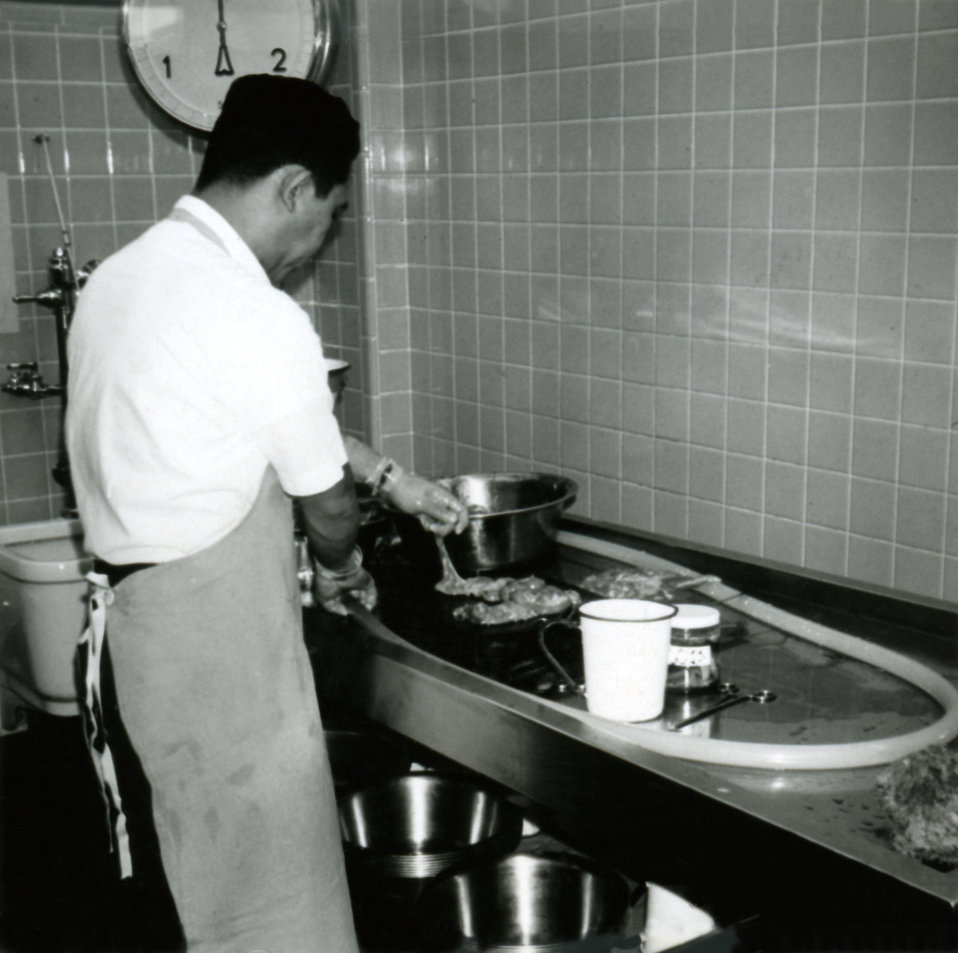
This 1950s historical photograph was provided by the Center for Disease Control's (CDC), National Institute for Occupational Safety and Health (NIOSH), and it depicted industrial medicine in real-world action. This image showed an autopsy technician at work, and highlighted the potential in this line of work, for exposure to disease pathogens, and toxic chemicals.